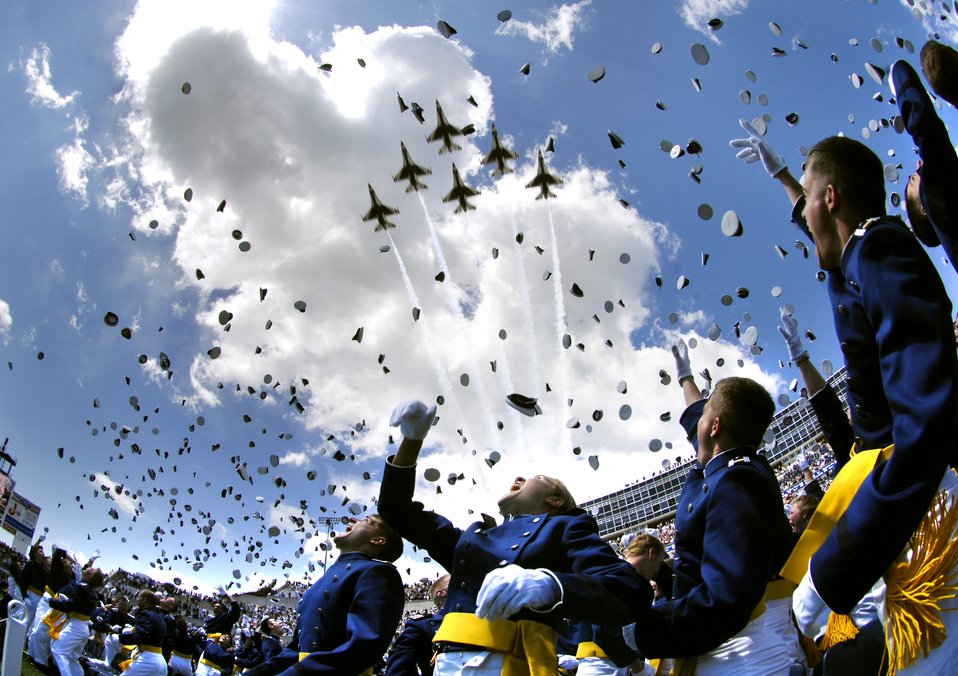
Academy grads celebrate

U.S. Air Force Academy graduates throw their hats in the air May 30 as the Air Force Thunderbirds fly overhead signaling the end of the graduation ceremony at the Academy in Colorado Springs, Colo.